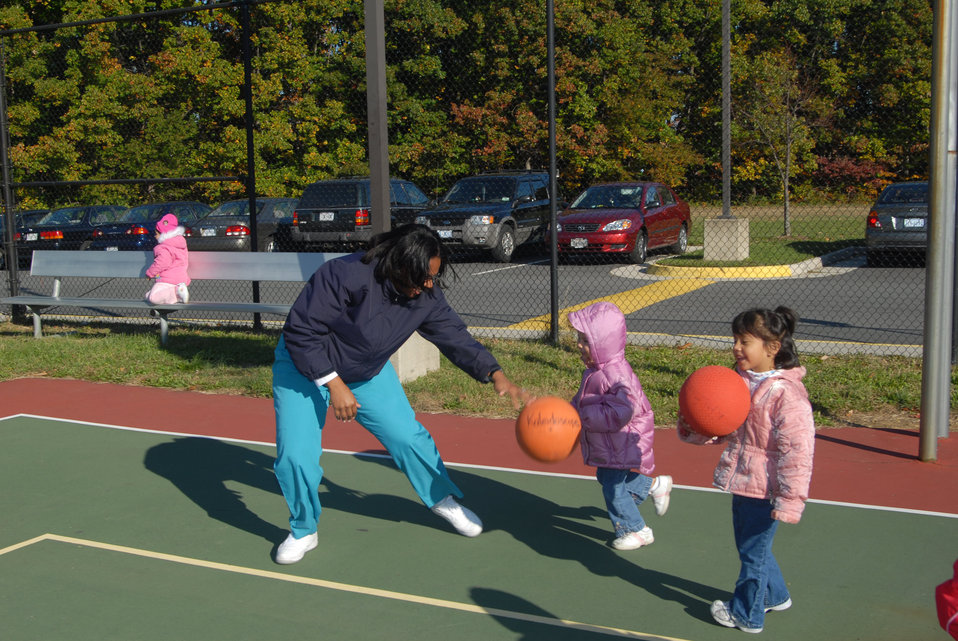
Youngsters at the Higher Horizons Day Care Center in Bailey Crossroads, VA., are encouraged to join in healthy exercises as well as nutritious meals on October 25, 2006 under the U.S. Department of Agriculture (USDA) Food Nutrition Service’s (FNS) Child and Adult Care Food Program (CACFP) and Head Start program. CACFP plays a vital role in improving the quality of day care for children and elderly adults by making care more affordable for many low-income families. Each day, 3.2 million children receive nutritious meals and snacks through CACFP. The Head Start program promotes a nutritious and active live style.